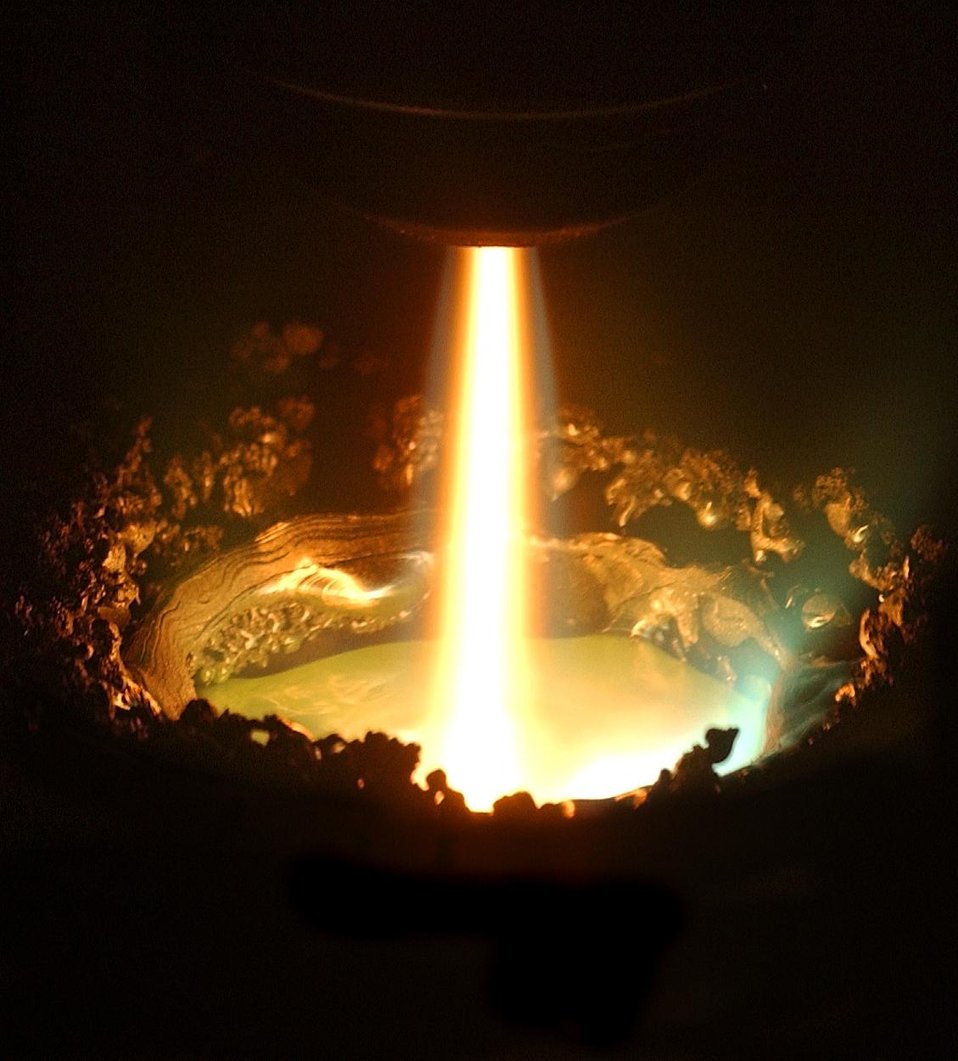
Shown is the Retech Model 150 Plasma Lab furnace in the Ames Laboratory's materials.
The Plasma Lab furnace generates temperatures well in excess of 10,000 degrees Celsius. The furnace can reactive metals and alloys without the need for crucibles to contain them, thus eliminating possible contamination from crucible materials.